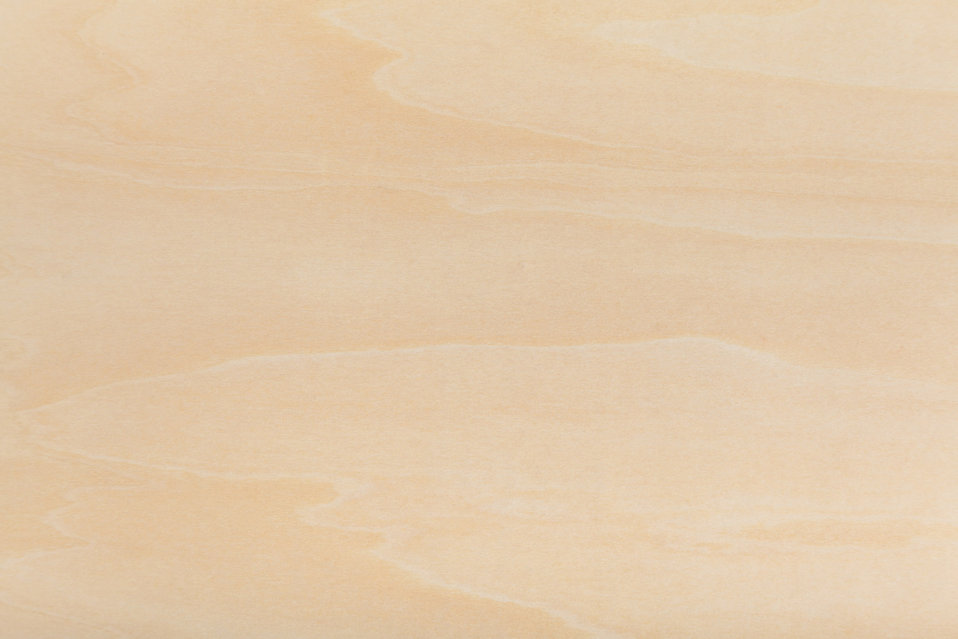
Light wood texture

Light wood background image.